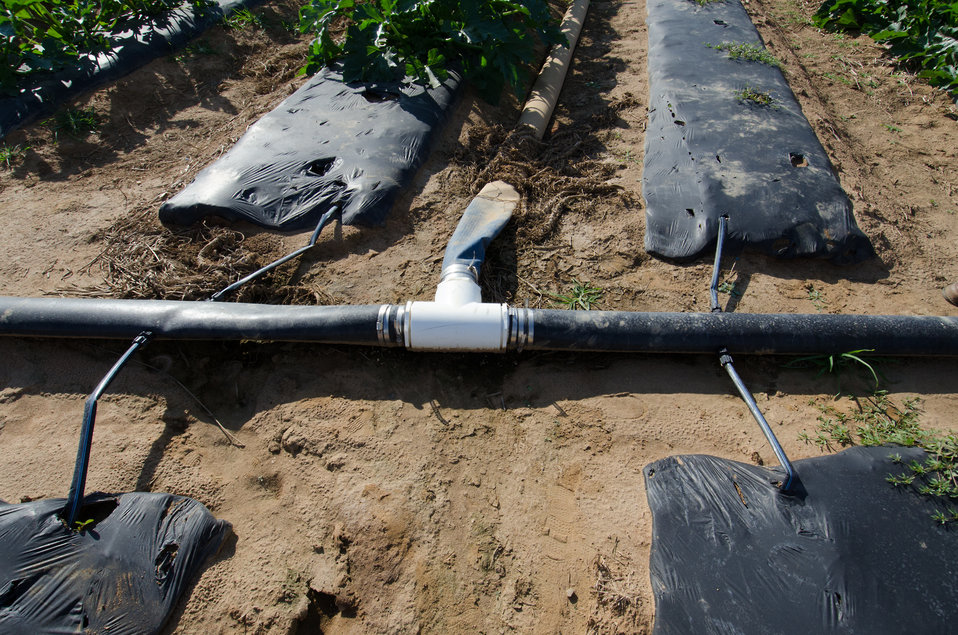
Kirby Farms third-generation family farm in Mechanicsville, VA, uses micro irrigation (drip watering) and plastic mulch (row covering) to efficiently grow green zucchini squash, on Friday, Sept 20, 2013. Water is pumped through a filtration/regulator system to flexible distribution pipes and hard connectors. Emitter hoses can be driven in where needed. Pressurized hoses emit water at a very slow rate near the base of the plants. Computers or timers provide additional controls. A micro irrigation system, also known as drip or trickle irrigation, is used to water directly to the plant root zone utilizing surface or subsurface applicators. For more information please see www.nrcs.usda.gov/Internet/FSE DOCUMENTS/nrcs141p2 024038...
Plastic sheeting is a form of mulch. It conserves soil moisture and reduces energy
use associated with irrigation, moderates soil temperature, provide erosion control, suppresses weed growth, facilitates the establishment of vegetative cover, improves soil quality, and reduces airborne particulates.